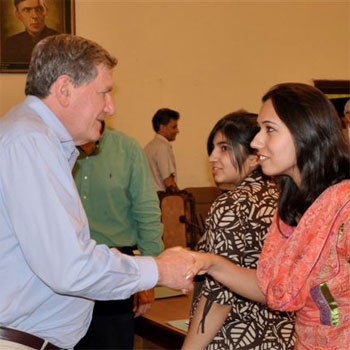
Special Representative Holbrooke Meets With Pakistani NGO Representatives and Punjab Provincial Government Officials

U.S. Special Representative for Afghanistan and Pakistan Richard C. Holbrooke meets with Pakistani NGO representatives and Punjab provincial government officials to discuss flood relief efforts and reconstruction plans in Multan, Pakistan, on September 16, 2010.